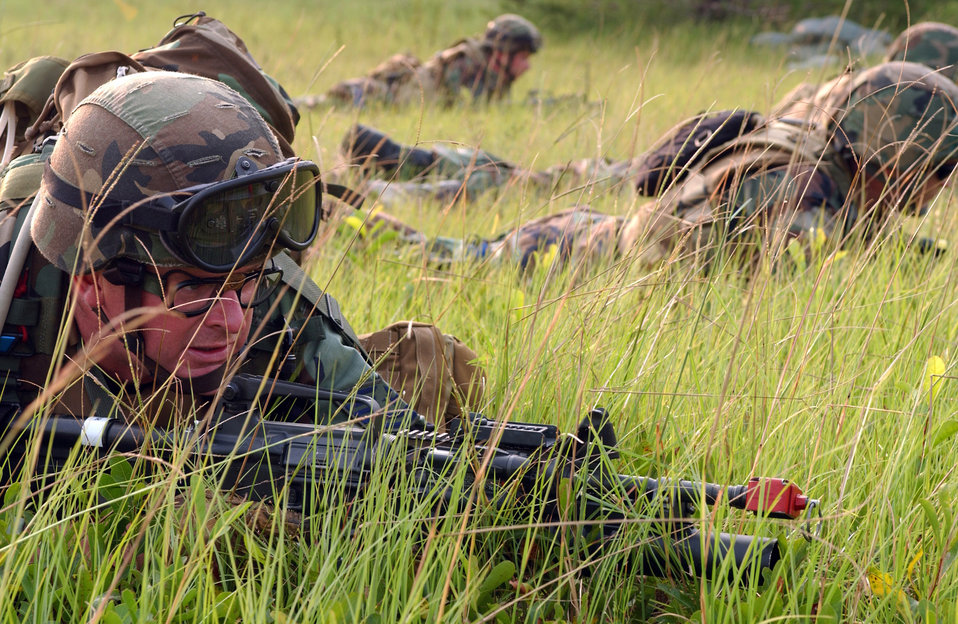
Secured field

EGLIN AIR FORCE BASE, Fla. -- Airborne operators secure a field while others search for explosive ordnance during an operational readiness inspection, Aug. 10. The operators are from the 823rd Red Horse Squadron at nearby Hurlburt Field.